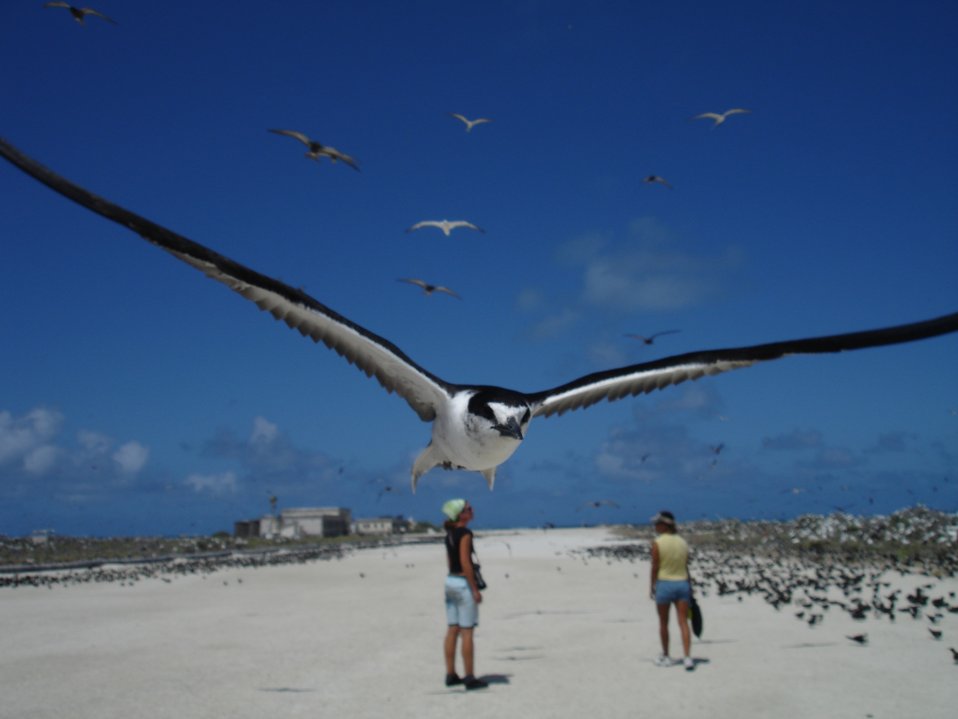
Sooty tern in flight